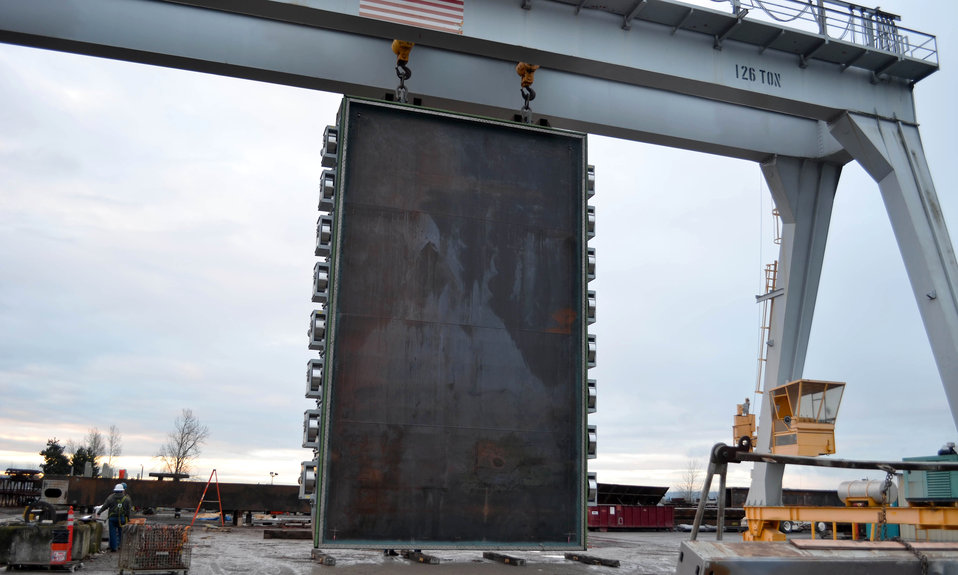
Giant Folsom spillway gates nearly ready for 600-mile journey to dam

An assembled bulkhead gate hangs from a large crane at Oregon Iron Works’ Vancouver, Wash., facility during a hang test Feb. 1, 2014. A hang test is conducted to make sure the gate hangs straight and will properly fit the new Folsom Dam auxiliary spillway’s dam in Folsom, Calif. When complete, the spillway will allow operators to release water from Folsom Lake earlier and more safely during large storms to help reduce the risk of flooding for the Sacramento region.